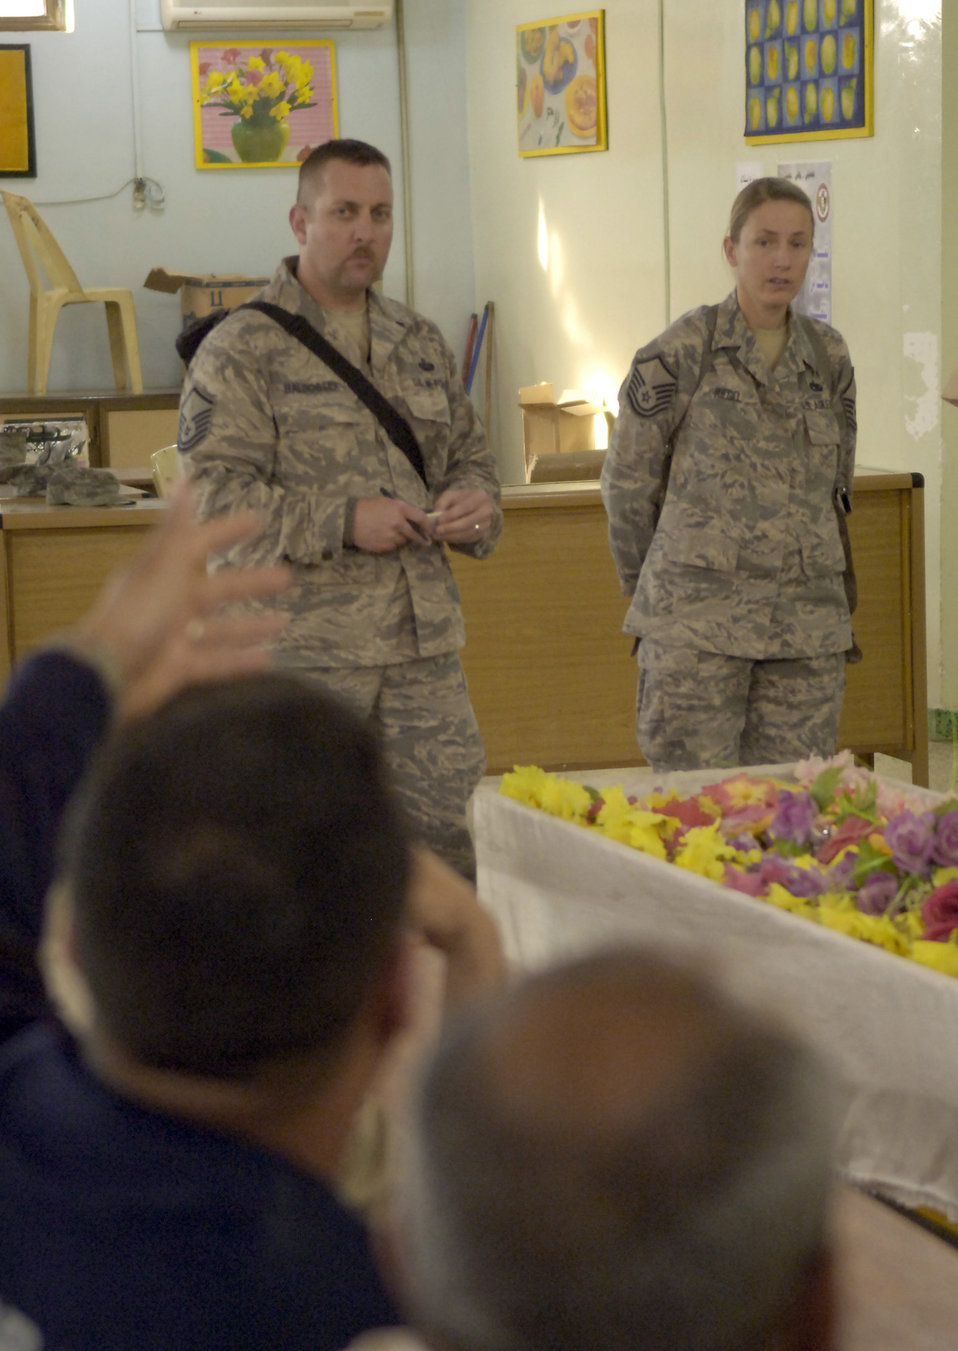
Building a better tomorrow, one NCO at a time

Master Sgt. Daryl Baldosserleft (left) and Master Sgt. Christina Riegel listen as an Iraqi airman asks a question during a NCO professional development course April 27, 2011. Airmen with the Iraq Training and Advisory Mission-Air and 447th Air Expeditionary Group taught the course to help the Iraqi air force develop its NCOs into stronger leaders. Sergeant Baldosser, deployed from Joint Base Lewis-McChord, Wash., is originally from Republic, Ohio. Sergeant Riegel, deployed from Ramstein Air Base, Germany, is originally from Greeley, Colo. Sergeant Baldosser is the 447th Expeditionary Communications Squadron Cyber Transport Systems section chief. Sergeant Riegel is the 447th Expeditionary Logistics Readiness Squadron Traffic Management superintendent.